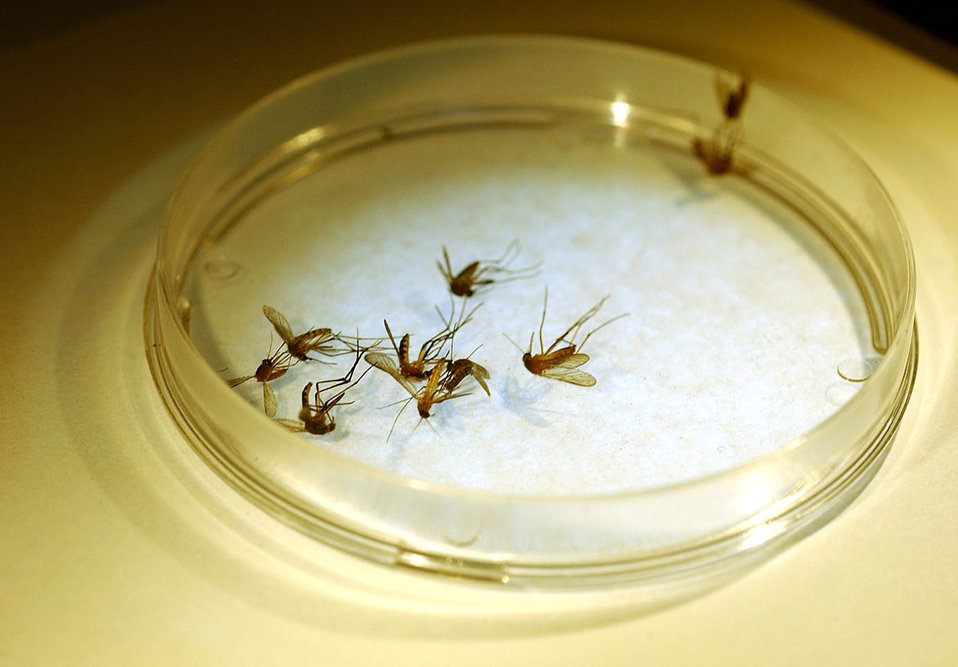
Specimens

FILE PHOTO -- Frozen mosquitoes are examined and classified into various categories by an entomologist. Mosquitoes are sorted into three different species and by gender. They will be examined for West Nile Virus.